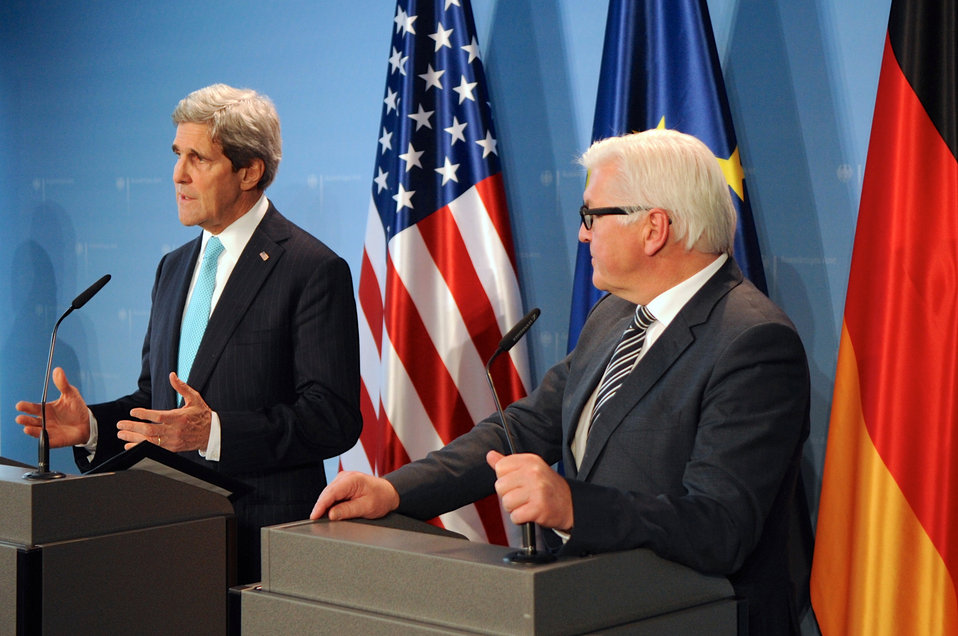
Secretary Kerry Speaks During News Conference With German Foreign Minister Steinmeier

U.S. Secretary of State John Kerry addresses reporters during a joint news conference with German Foreign Minister Frank-Walter Steinmeier in Berlin, Germany, on January 31, 2014.